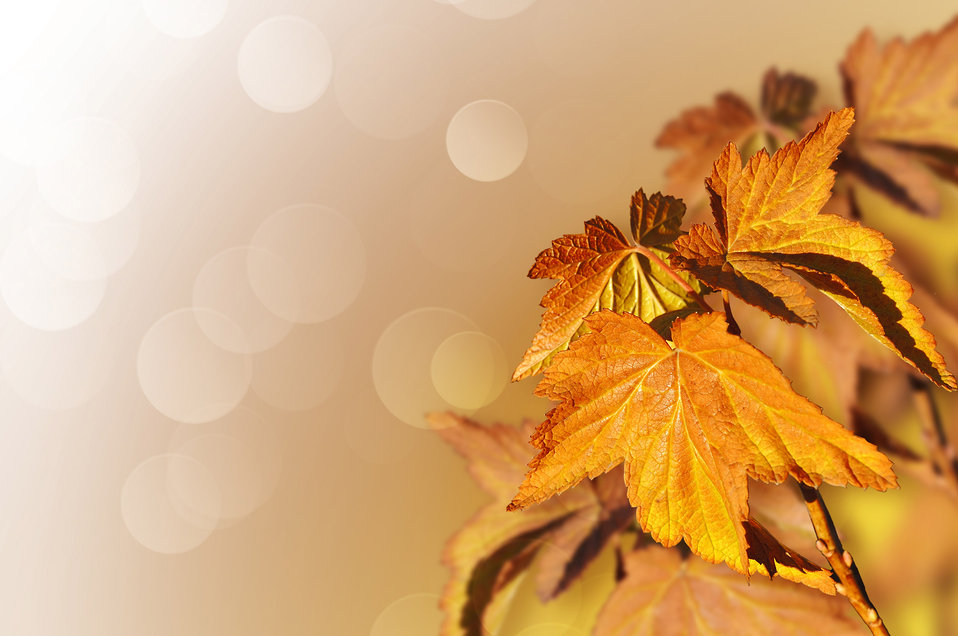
Background from autumn leaves

Background with beautiful autumn leaves. autumn background..